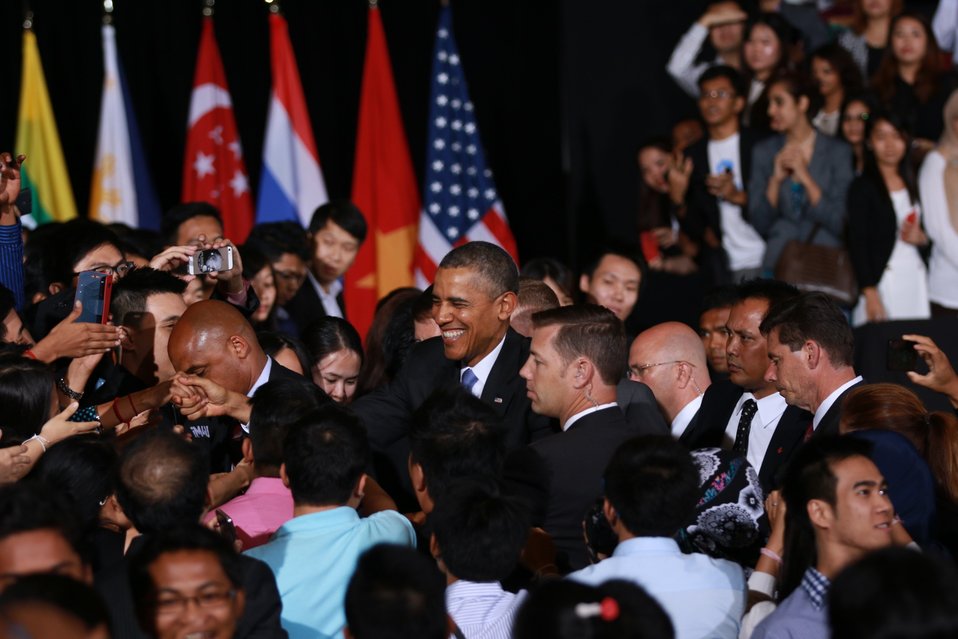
President Obama Delivers Remarks at a Young Southeast Asian Leaders Initiative Town Hall

President Barack Obama delivers remarks at a Young Southeast Asian Leaders Initiative Town Hall in Kuala Lumpur, Malaysia on April 27, 2014.